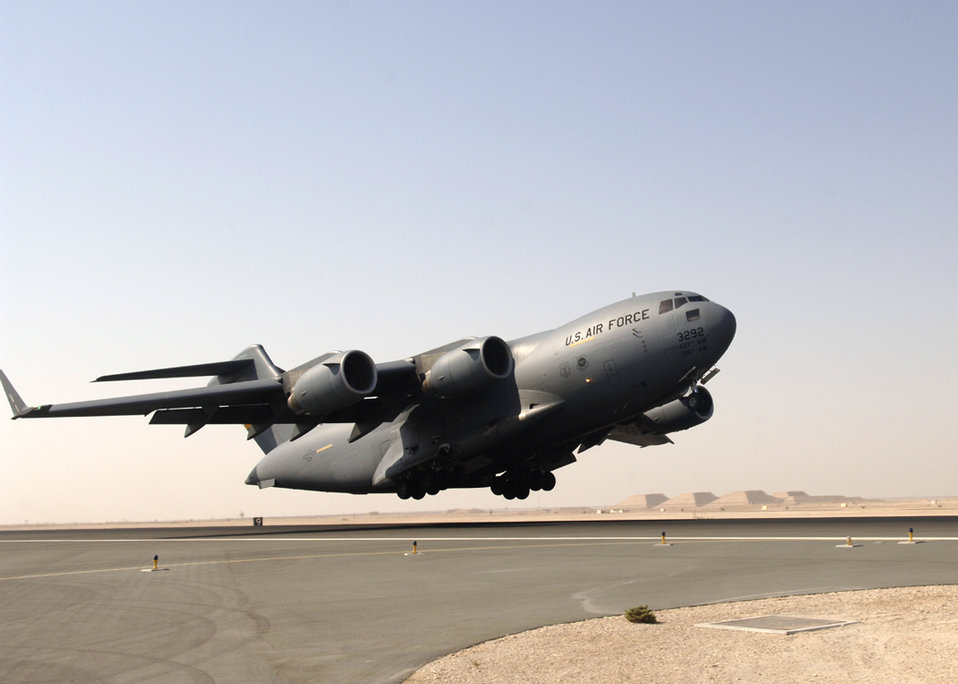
June 17 airpower summary

A C-17 Globemaster III takes off in Southwest Asia to deliver passengers and cargo in support of Operation Iraqi Freedom. Coalition C-17s flew 43 sorties June 16 and delivered 491 tons of cargo.